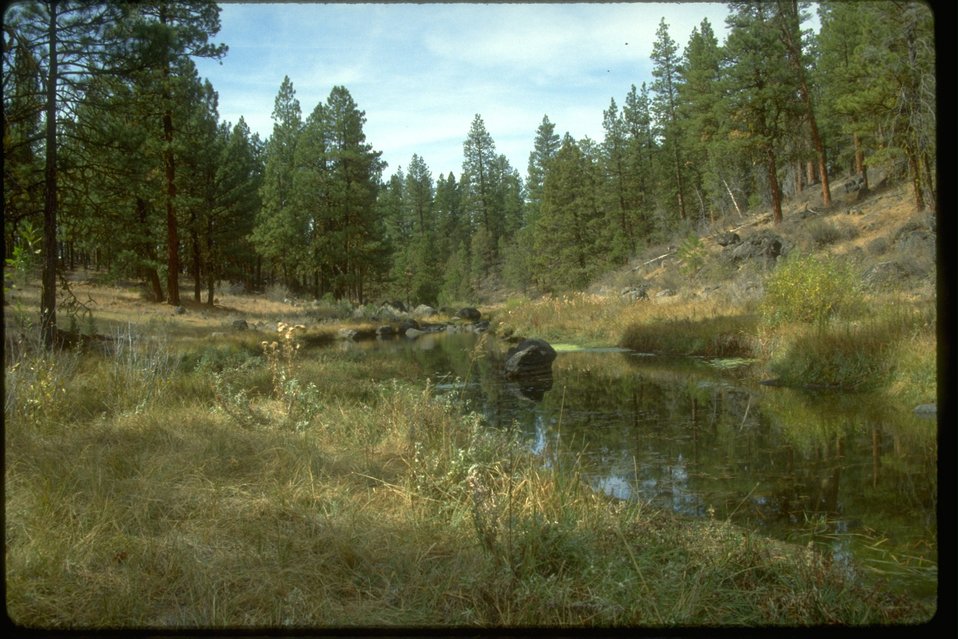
Riparian area functioning at risk in Klamath County.